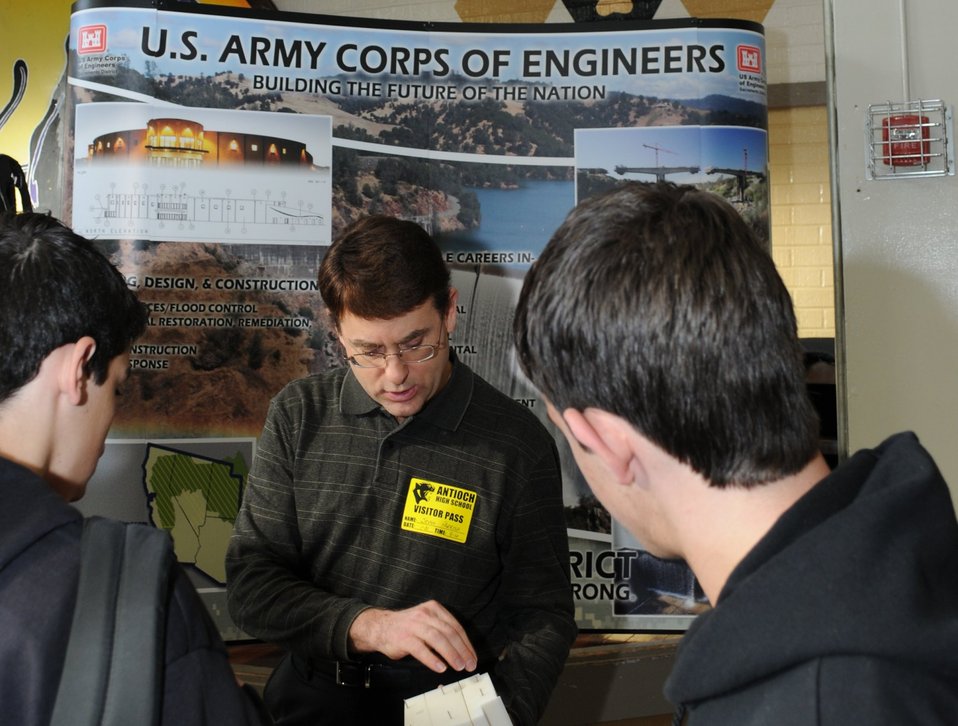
ANTIOCH, Calif. – U.S. Army Corps of Engineers Sacramento District senior electrical engineer John Parrish points out the details of a 3-D model of the Folsom auxiliary dam spillway for students at Antioch High School here Jan. 31.

Parrish and structural design section chief Roger Zemba were invited to share stories of their educational and vocational backgrounds and explain the Corps’ various missions to more than 120 freshmen enrolled in the high school’s four-year Academy of Engineering and Design for a Greener Environment (EDGE).

“If these students are connected to something interesting and real, they will continue to be high-performing,” said vice principal David Johnstone. “These engineers are helping students see the relationship between academic performance and careers in the engineering field, which is vital for our nation’s future.”